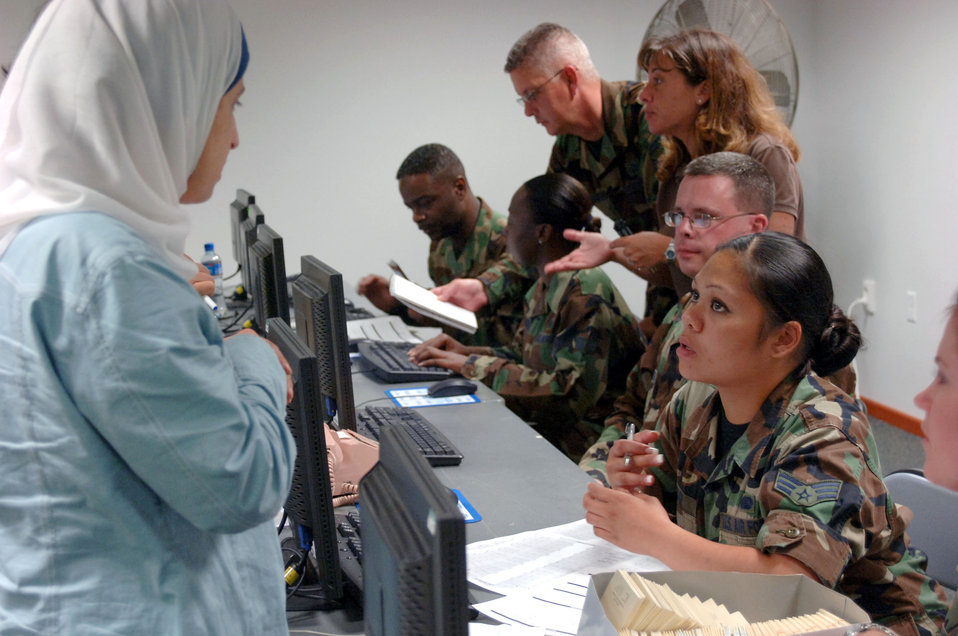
Incirlik assists Americans fleeing Lebanon

Senior Airman Kiana Edge (right) briefs an American citizen about the temporary living quarters during processing at Incirlik Air Base, Turkey, on July 21. The woman was one of 29 Americans who processed into the base today after departing Lebanon. Airman Edge is a fitness specialist with the 39th Services Squadron.